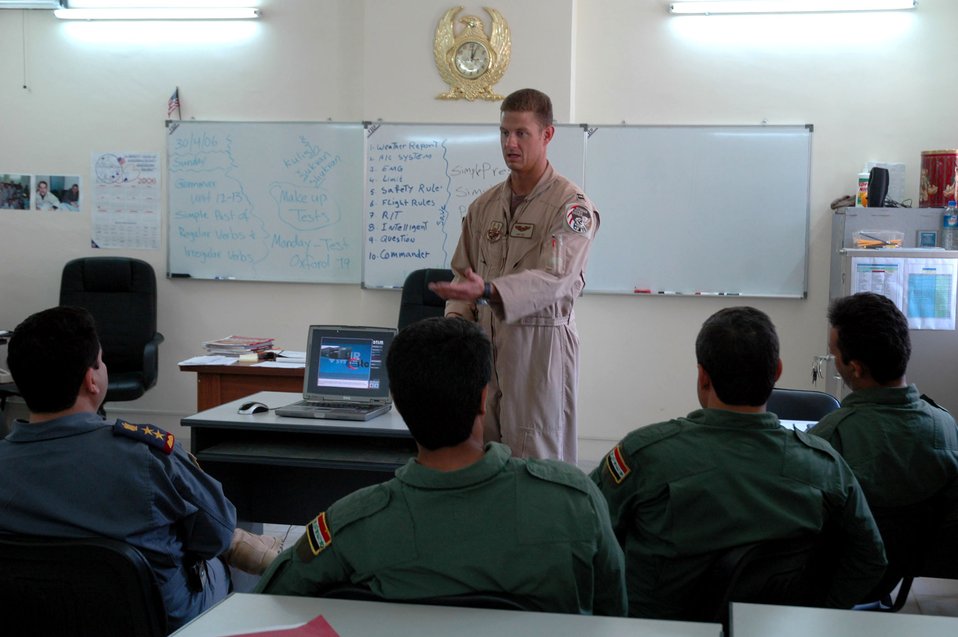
Airmen help Iraqi pilots fly again

Capt. Anthony Brim instructs Iraqi Air Force pilots at Kirkuk Air Base, Iraq, on Sunday, April 30, 2006. Captain Brim is a member of the Coalition Air Force Transition Team, helping the Iraqi 3rd Squadron in developing operational capabilities.